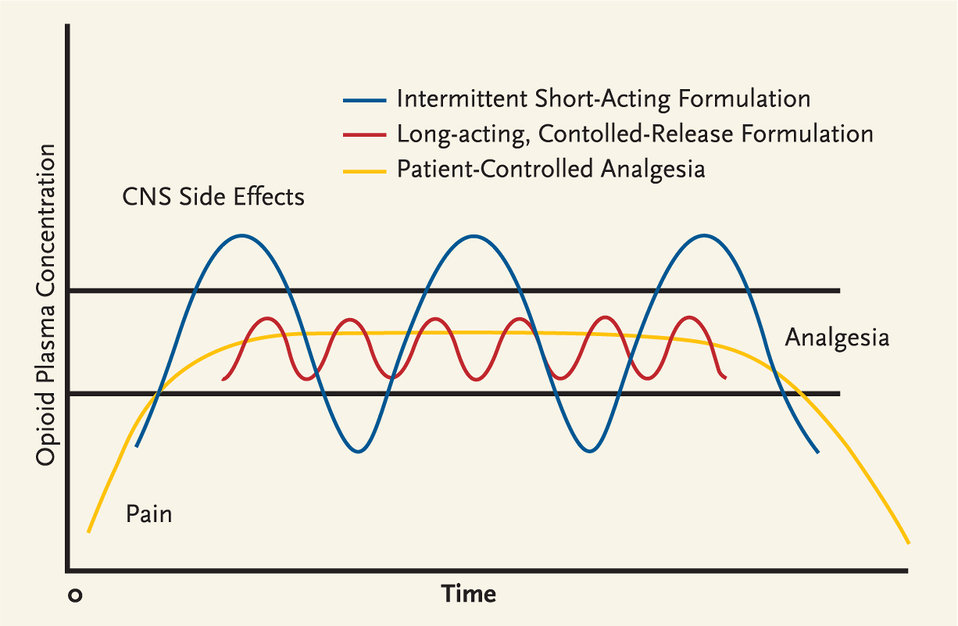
Chart

Schedule of opioid administration